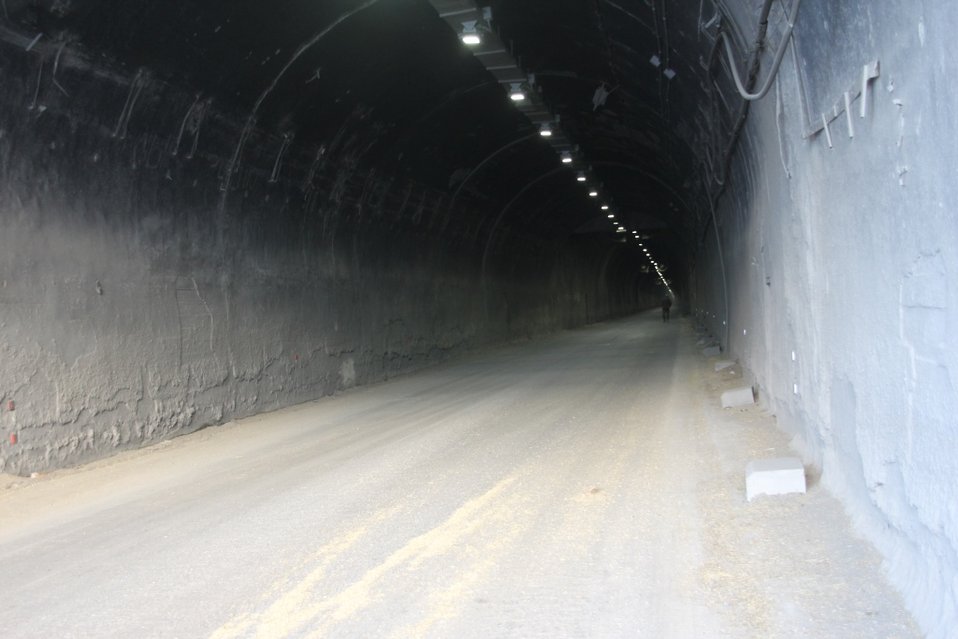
Lights in the Salang tunnel are working (November 25, 2013)